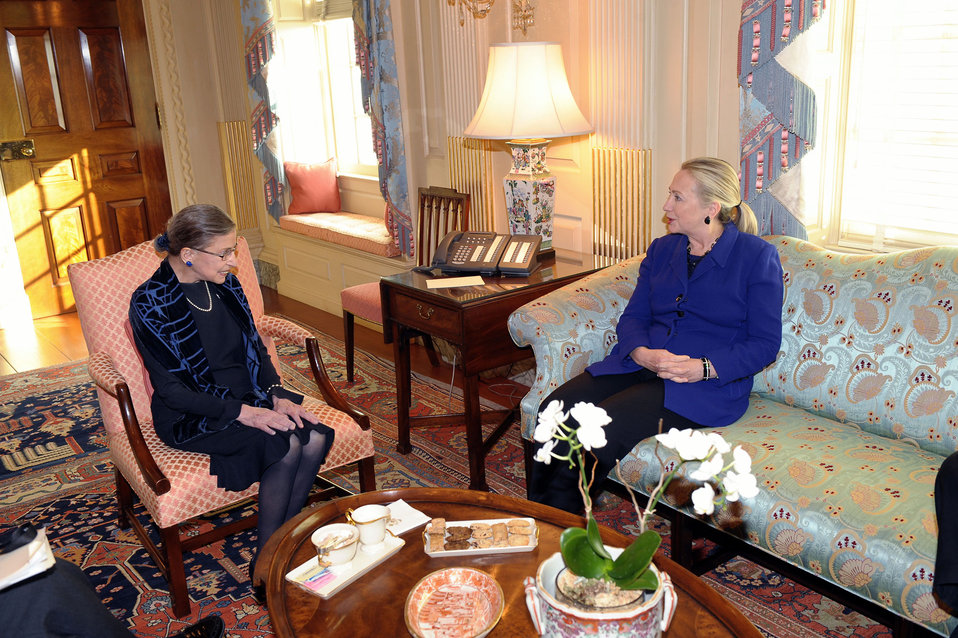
Secretary Clinton Meets With Supreme Court Justice Ginsburg

U.S. Secretary of State Hillary Rodham Clinton meets with Supreme Court Justice Ruth Bader Ginsburg at the U.S. Department of State in Washington, D.C., on January 25, 2012.